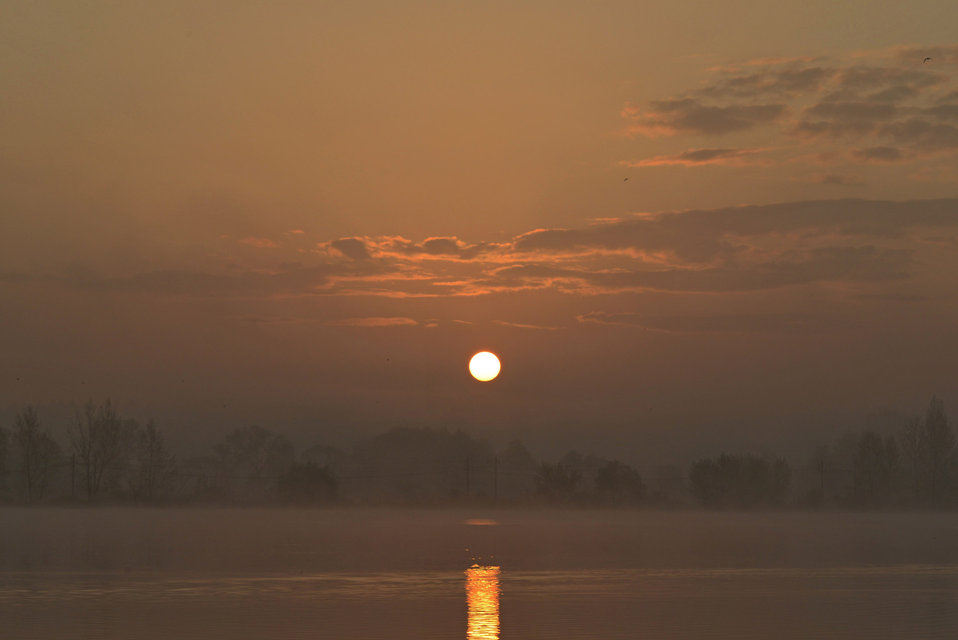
Sunrise in the fog.